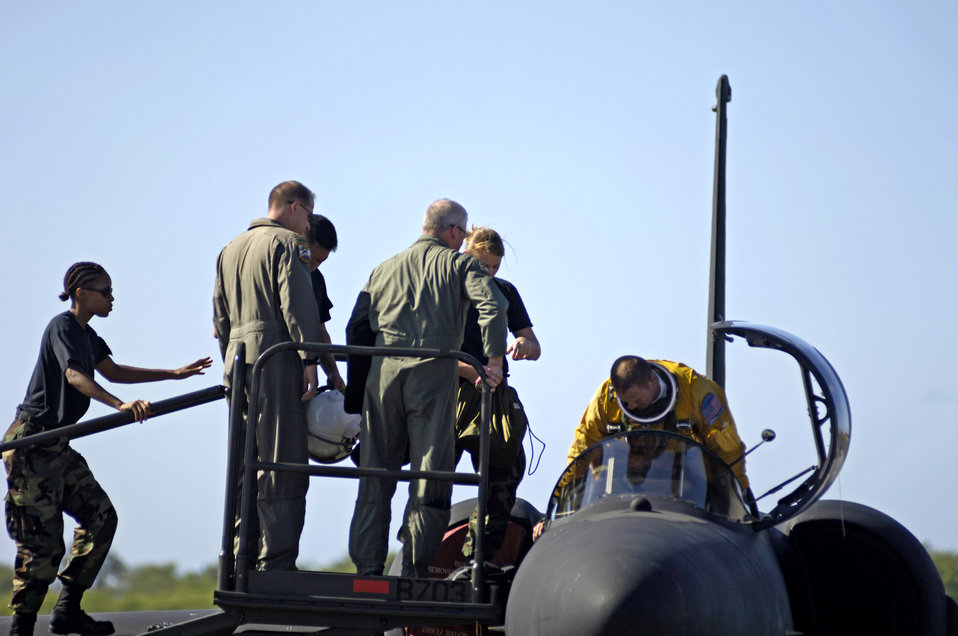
Dragon Lady face-lift

Airmen from the 9th Reconnaissance Wing at Beale Air Force Base, Calif., help their pilot out of a U-2 Dragon Lady at Hickam AFB, Hawaii, on Tuesday, June 13. The aircraft is en route to South Korea. U-2s are undergoing a $1.5 billion upgrade. Cockpit instruments will be modernized with full-color displays that replace gauges and dials with state-of-the-art, touch-screen technology.